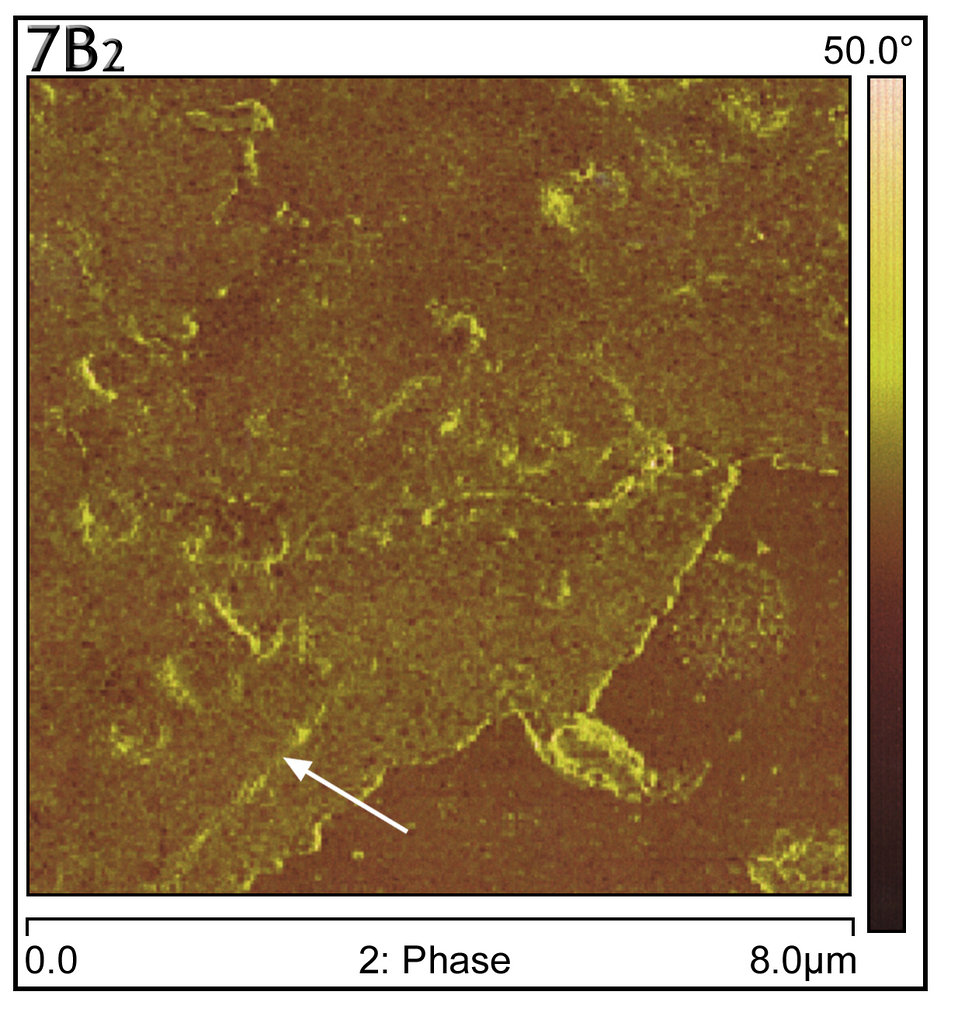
This AFM showed gross thickening of cell cytoplasmic microfilaments just beneath the Vero cell plasma cell membrane (arrows).